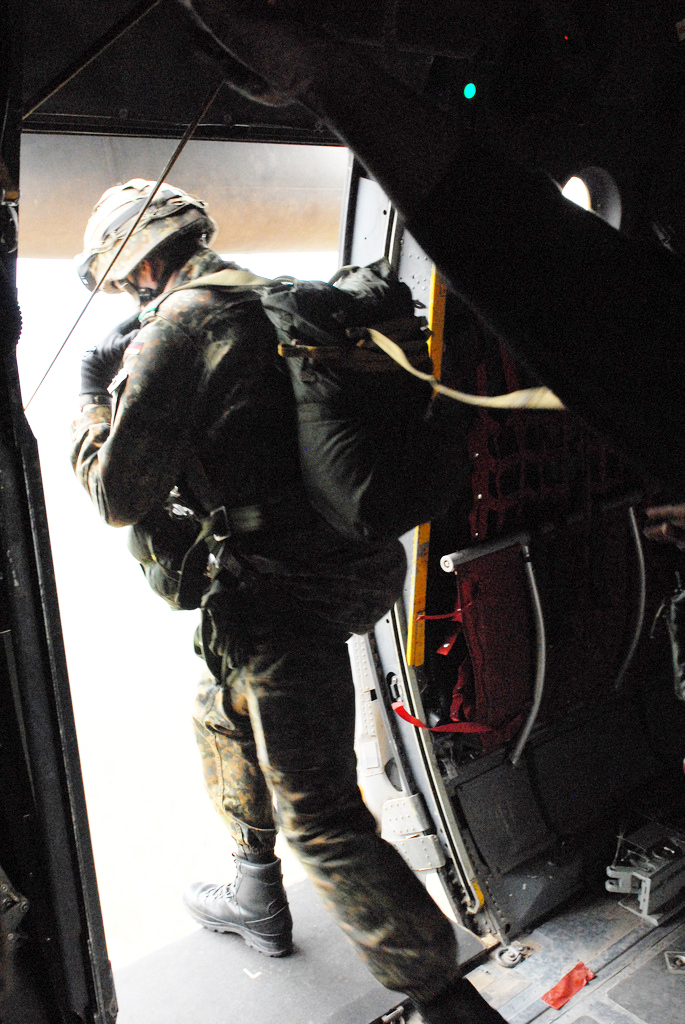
Little Rock officials lead joint force training effort at exercise

A German paratrooper training with the 82nd Airborne Division's Advanced Airborne school at Fort Bragg, N.C., jumps out of a C-130 Hercules as part of Joint Forcible Entry Exercise 10-01 Oct. 28, 2009, at Pope Air Force Base, N.C. The JFEX focused on cohesive training between the Air Force and Army to re-establish forcible entry capability through airpower.